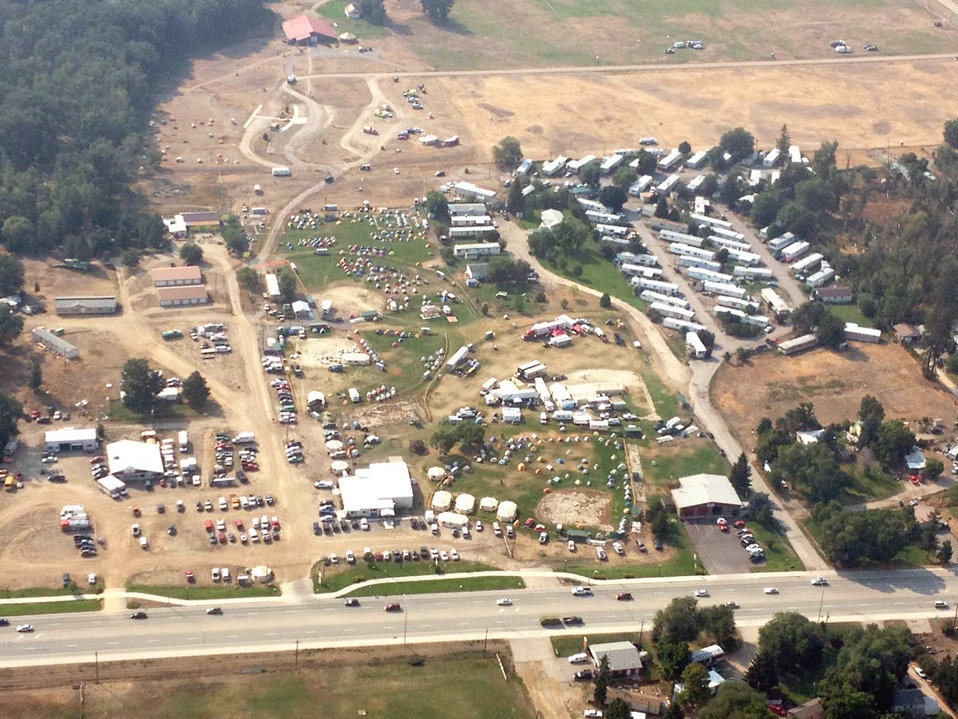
The Lolo Creek Fire Incident Command Post (ICP) is located at the Lolo Community Center and Brenda Patch Memorial Ball Field in Lolo, MT and is the temporary home of 794 fire personnel. The helibase is in the large field at the top of the photo at Traveler's Rest State Park with US Hwy 93 in the foreground. The Lolo Creek Fire in the Lolo National Forest near Lolo, MT began on Aug. 18, 2013 by lightning has consumed approximately 10,902 acres and is 60% contained.